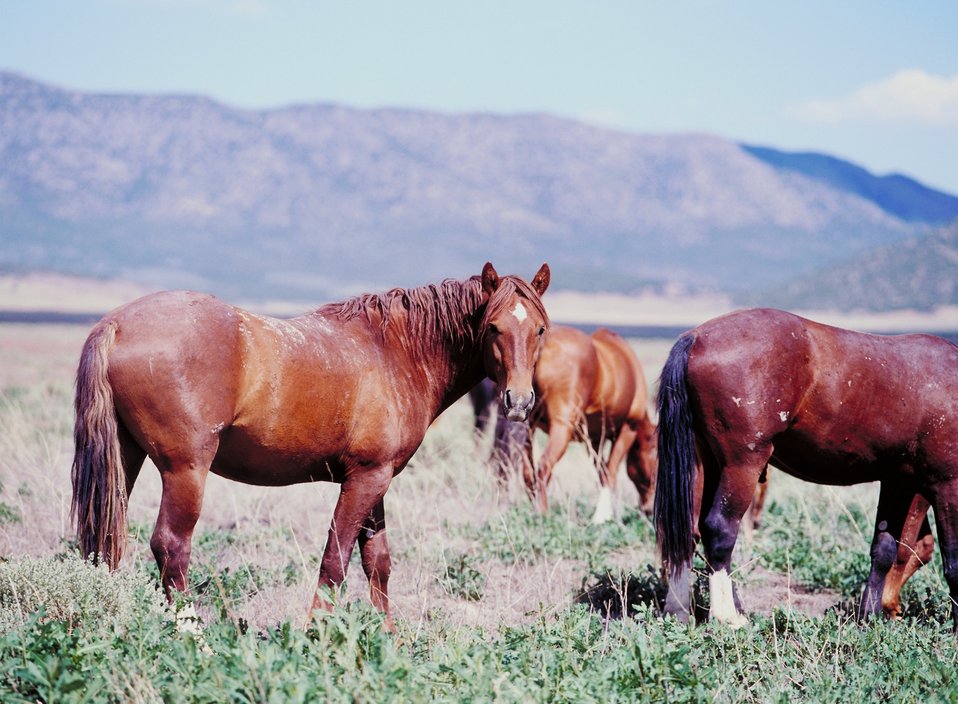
Onaqui Herd near Dugway, Utah.